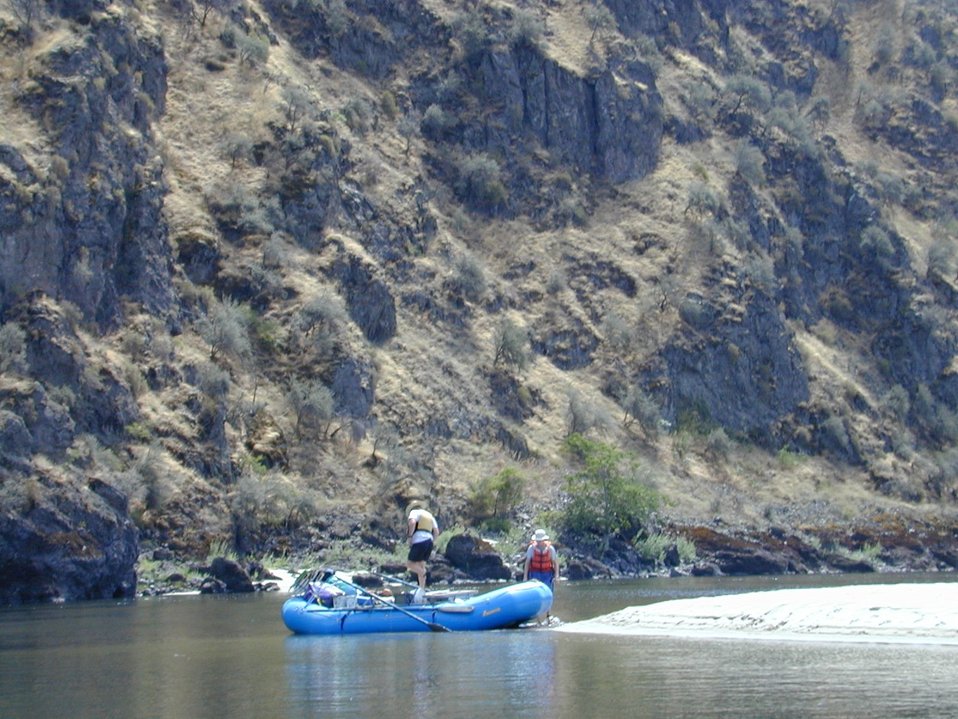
Recreation Rafting on Lower Salmon River Cottonwood Field Office UCSC Upper Columbia Salmon Clearwater District